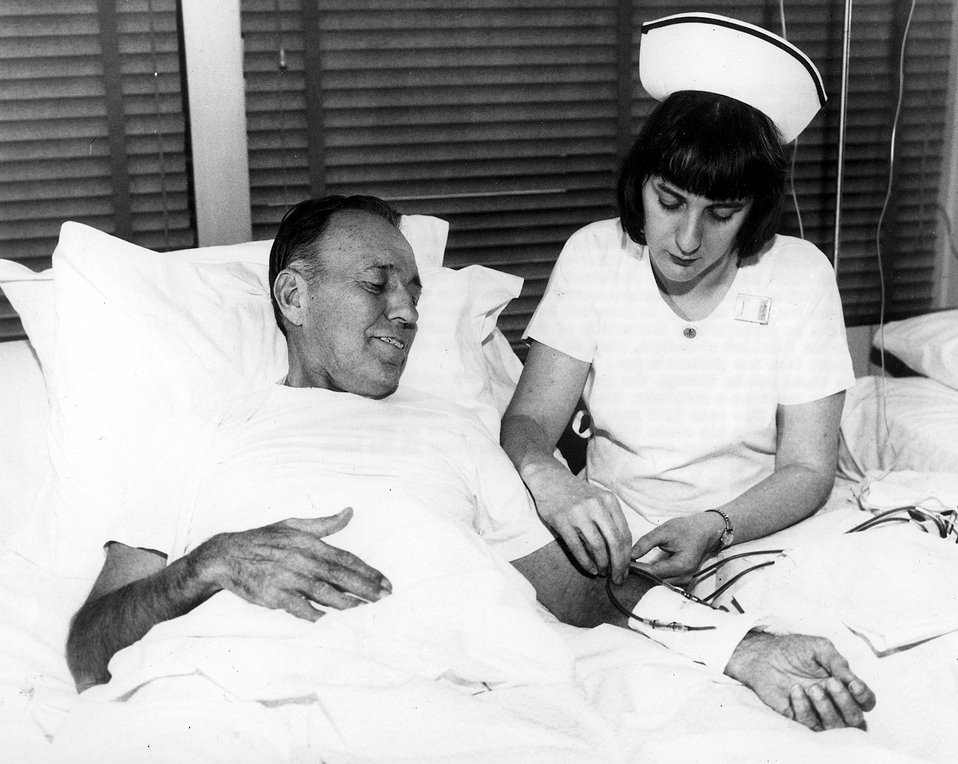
A patient is undergoing treatment for leukemia by expracorpereal irradiation of his blood. The nurse is about to connect the arteriovenenous shunt in the patient's forearm to the tubing leading into a shielded container where the gamma ray source is located.
c.1966